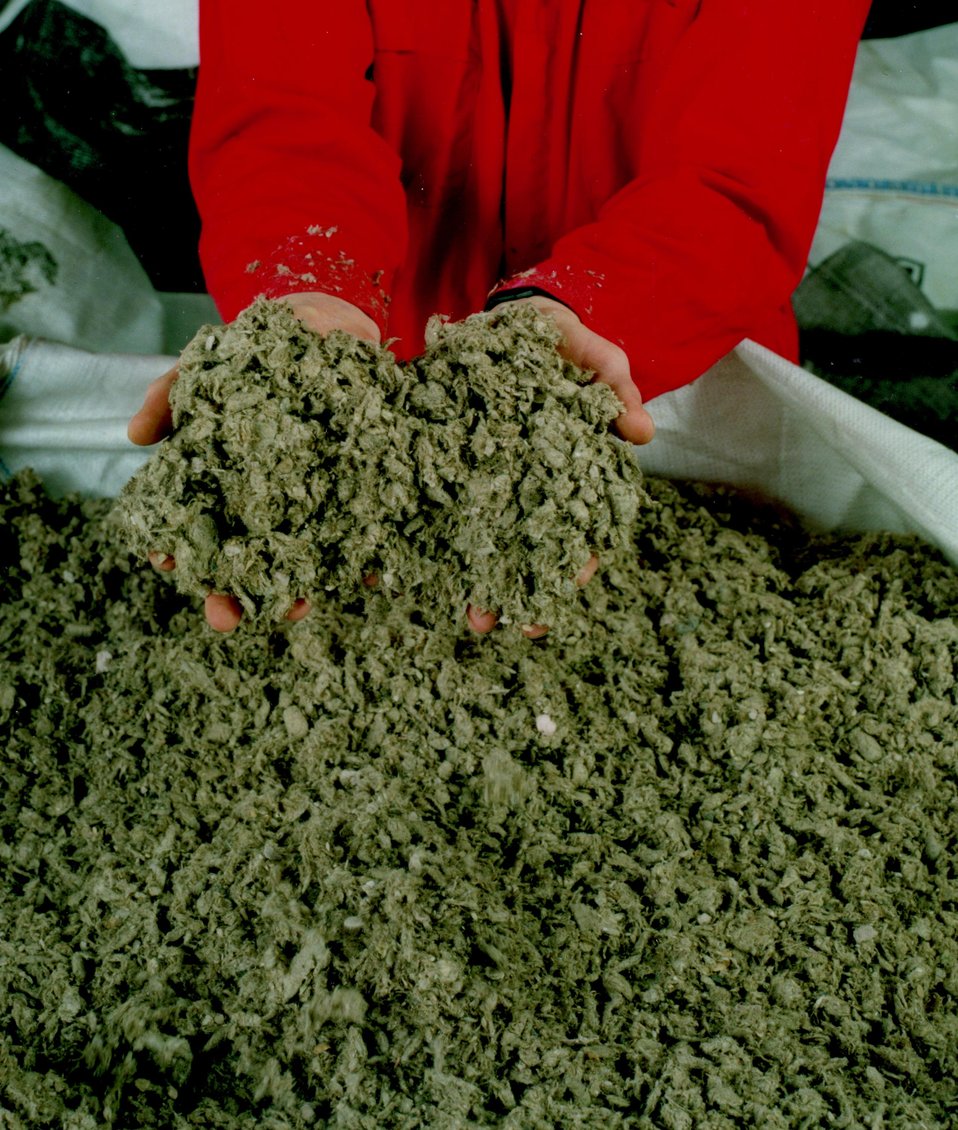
SLUDGE FROM PAPER MILLS IS BEING USED BY BIOFINE INC., SOUTH GLENS FALLS, NY TO PRODUCE LEVULINIC ACID.

USING RENEWABLE FEEDSTOCKS, SPECIFICALLY PAPER MILL SLUDGE, BIOFINE INC. OF SOUTH GLENS FALLS, NY PRODUCES LEVULINIC ACID, A CLEAN INTERMEDIARY CHEMICAL THAT CAN BE USED TO CREATE A NUMBER OF OTHER CHEMICALS. UNDER A COOPERATIVE RESEARCH AND DEVELOPMENT AGREEMENT (CRADA), PNNL IS DEVELOPING A PROCESS TO TURN LEVULINIC ACID INTO AUTOMOTIVE FUEL KNOWN AS METF (METHYLTETRAHYDROFURAN).